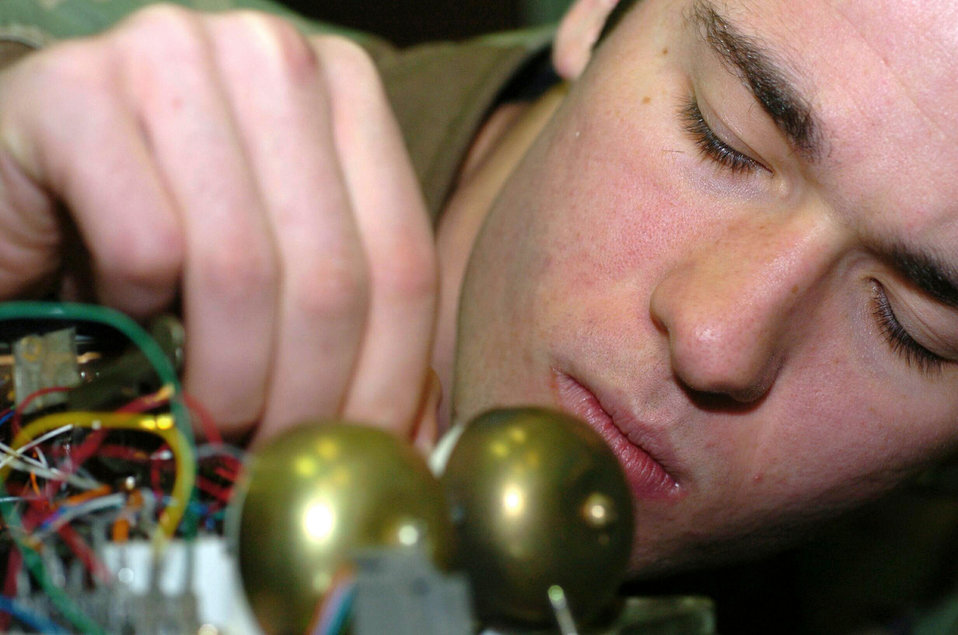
Ring ring

GWANGJU AIR BASE, South Korea -- Senior Airman Arthur E. Lewis repairs the ringer on a standard 2500 model phone that here Dec. 9. He is part of the 3rd Air Expeditionary Group. Airman Lewis is deployed from the 354th Communications Squadron at Eielson Air Force Base, Alaska